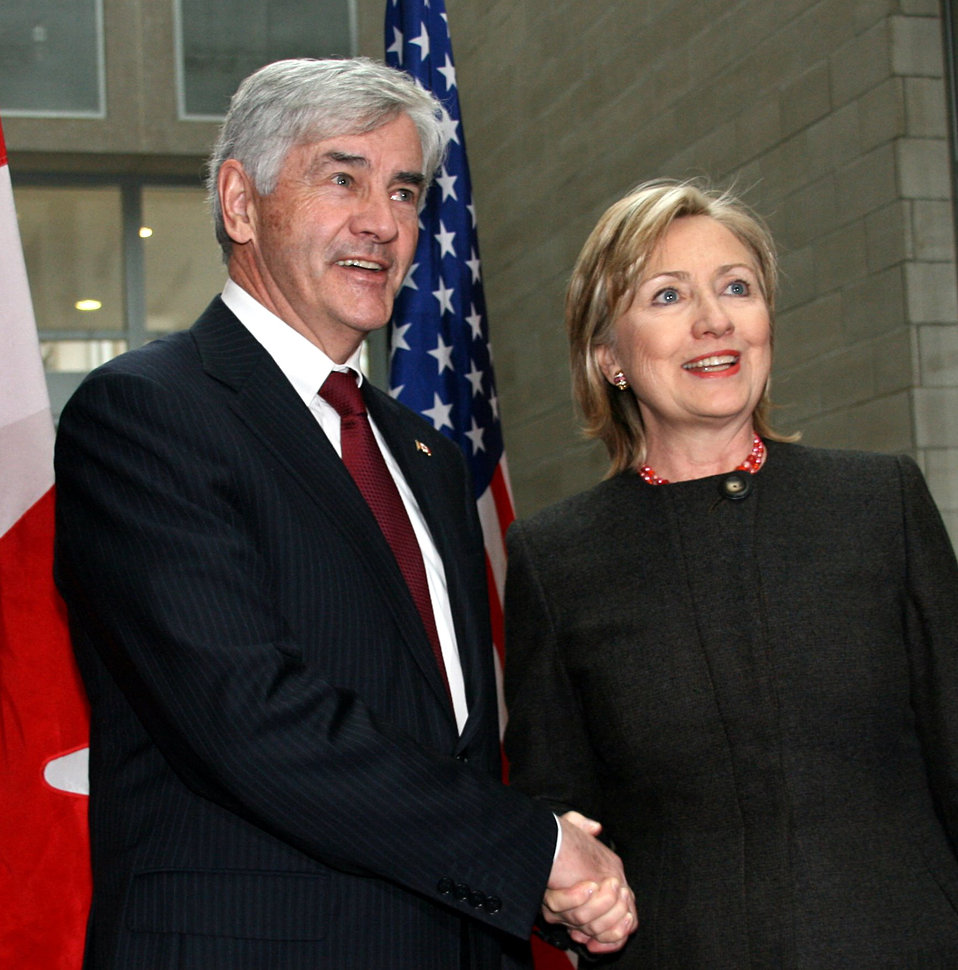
Secretary Clinton in Montreal

U.S. Secretary of State Hillary Rodham Clinton shakes hands with Canadian Foreign Minister Lawrence Cannon in Montreal, Canada January 25, 2010.